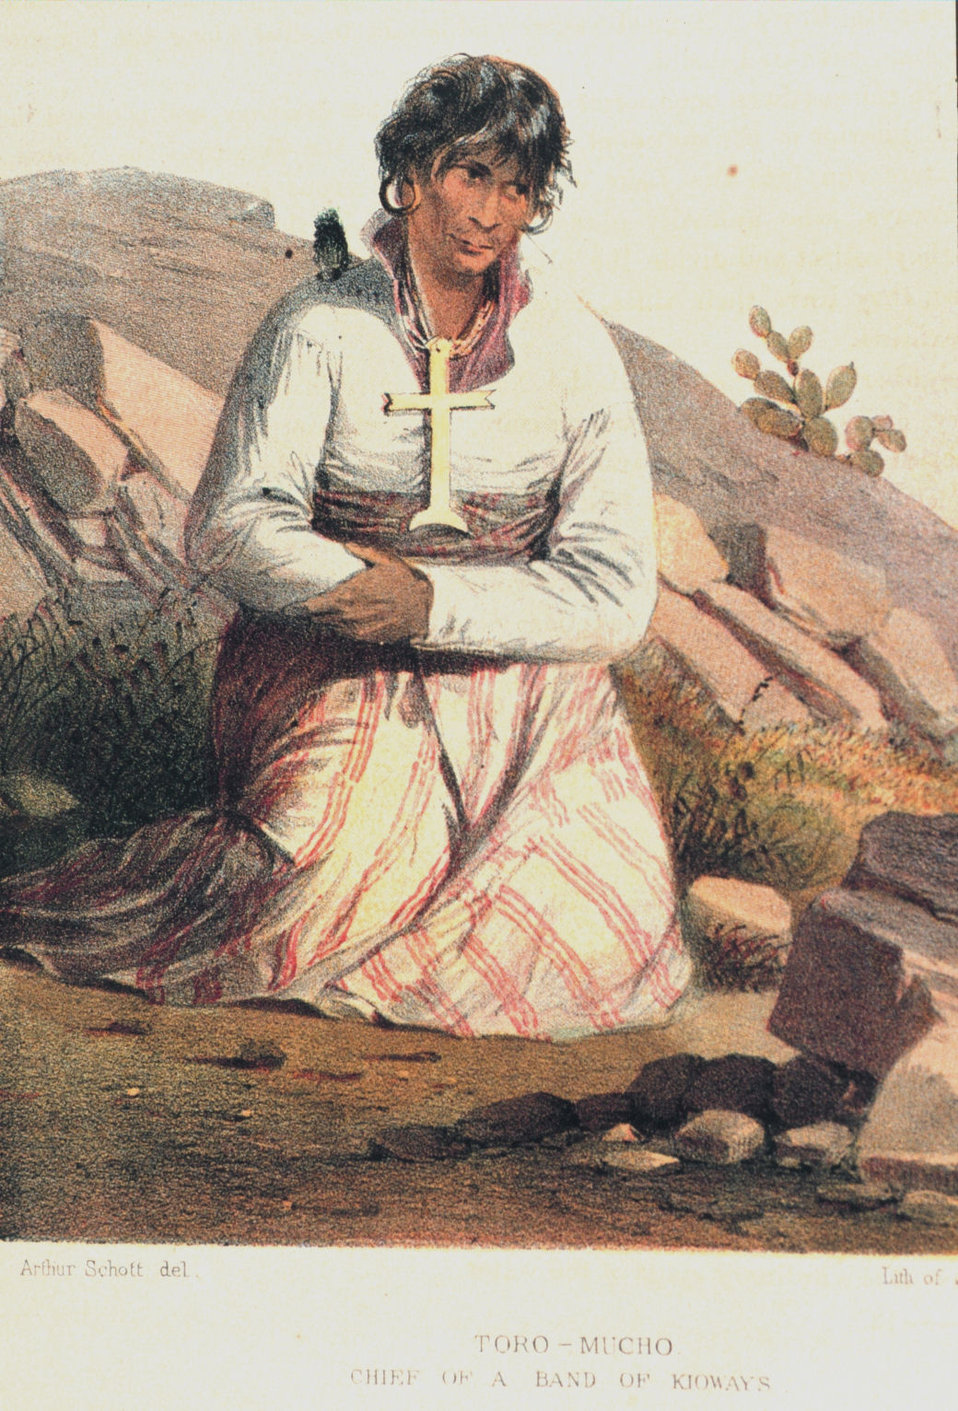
Toro-Mucho, chief of a band of Kioways. In: 'United States and Mexican Boundary Survey. Report of William H. Emory ....' Washington. 1857. Volume I. P. 89. Library Call Number F786 .U45 1857.